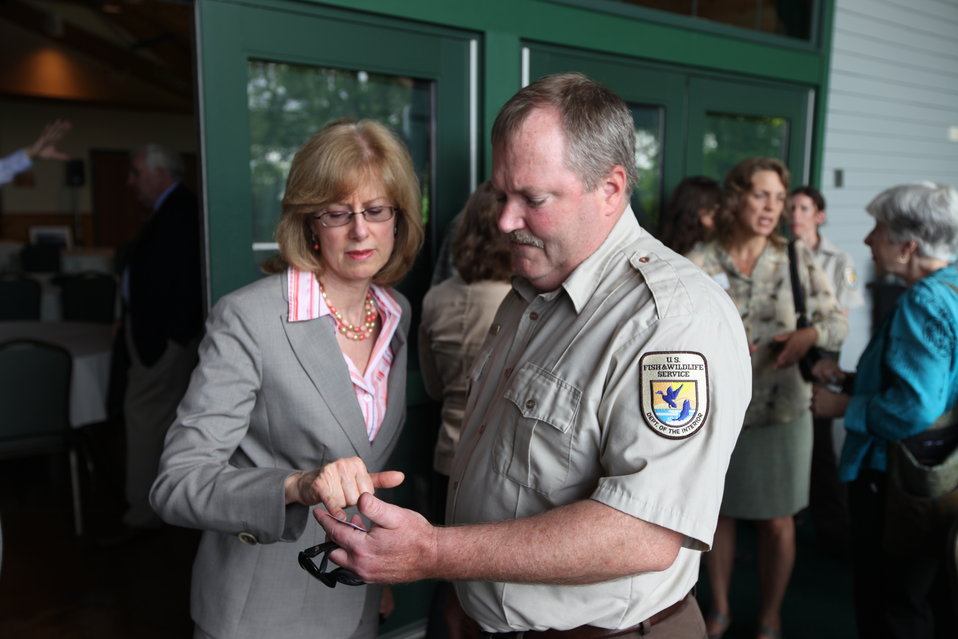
Andy French & Rebecca Wodder

Senior Advisor to the Secretary Rebecca Wodder & Andy French from the U.S. Fish & Wildlife Service .